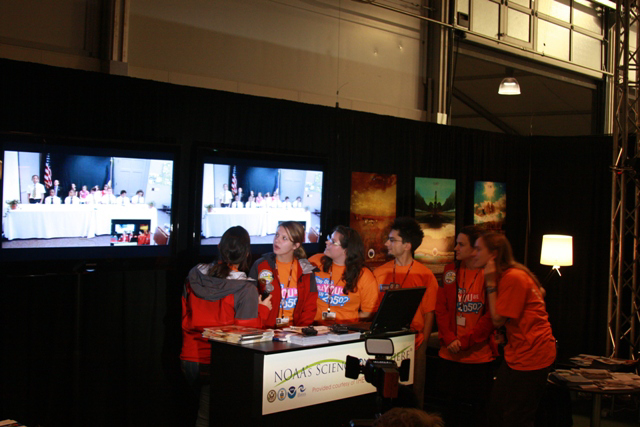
Youth Delegation DVC at COP-15

Members of the youth delegation at COP-15 participate in a DVC with U.S. students in Washington and Virginia sponsored by the U.S. Forest Service during COP15 (Conference of the Parties to the UN Framework Convention on Climate Change) in Copenhagen, Denmark December 10, 2009.